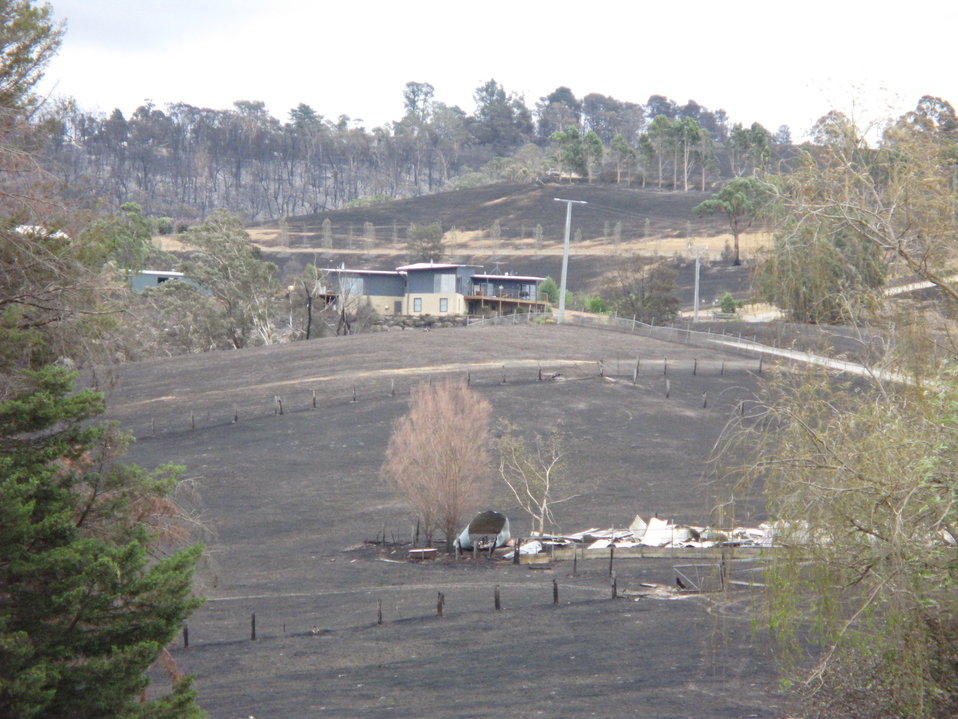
Bushfire damage to property just north of Yarra Glen. Photo taken by myself with verbal permission from the property owner, 10th of February, 2009.